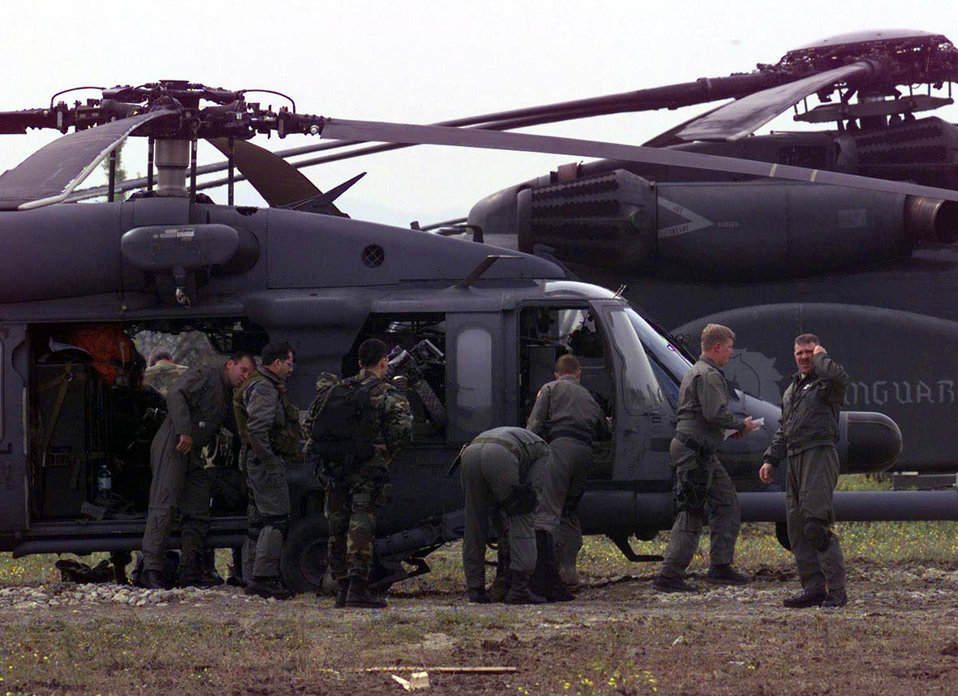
Shining Hope

TIRANA, Albania -- Members of a combat search and rescue team prepare to download their HH-60 Pave Hawk helicopter at Rinas airport. The team is on call to support the humanitarian aid mission Joint Task Force Shining Hope.